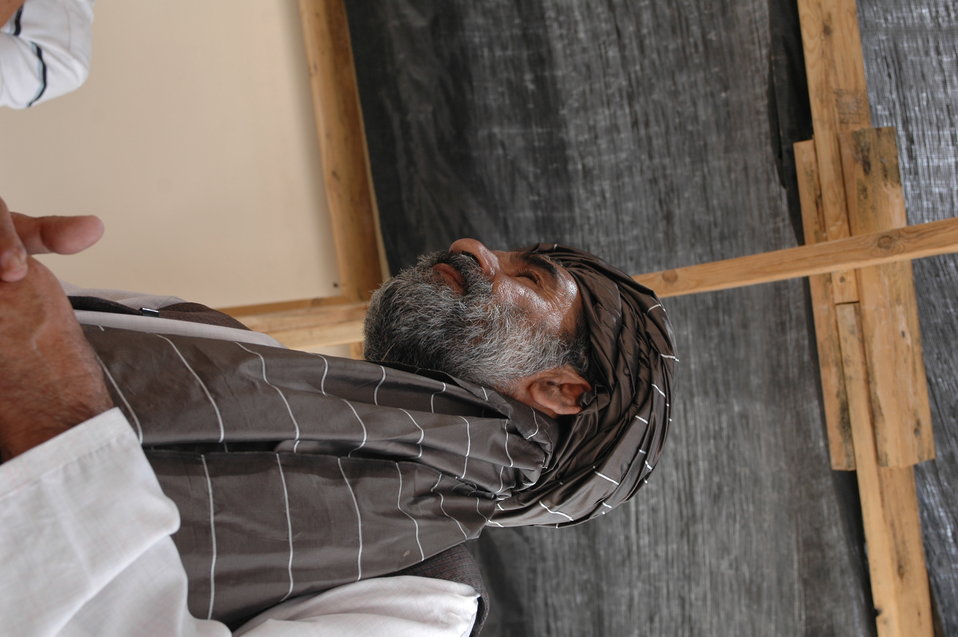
CODEL Berman